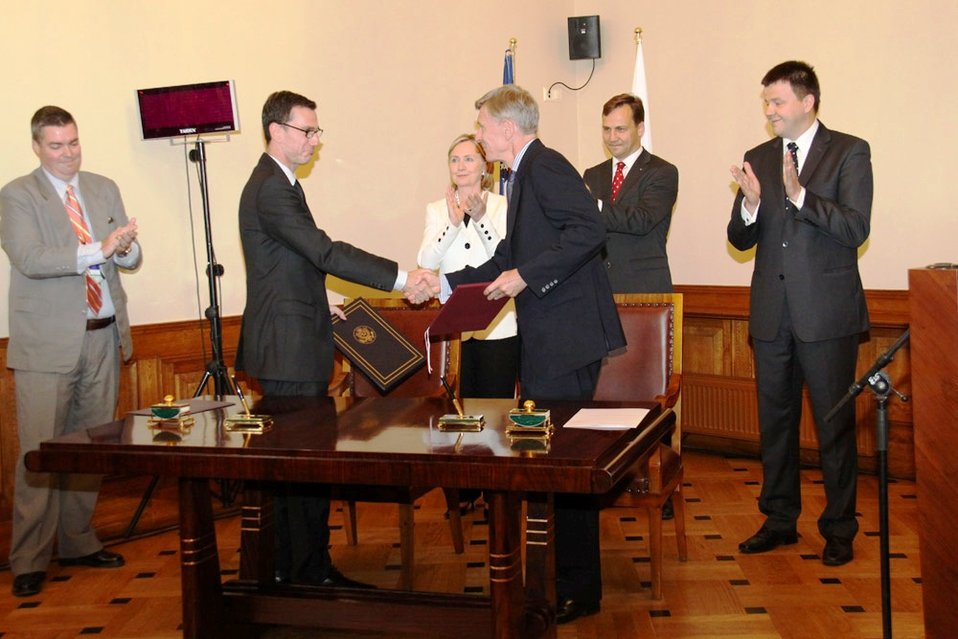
Ambassador Feinstein and Polish Undersecretary Najder Shake Hands After Signing the Annex to the Protocol to the Ballistic Missiles Defense Agreement

U.S. Ambassador to Poland Lee Feinstein and Polish Undersecretary of State Najder shake hands after signing the Annex to the Protocol to the Ballistic Missiles Defense Agreement in Krakow, Poland, on July 3, 2010.